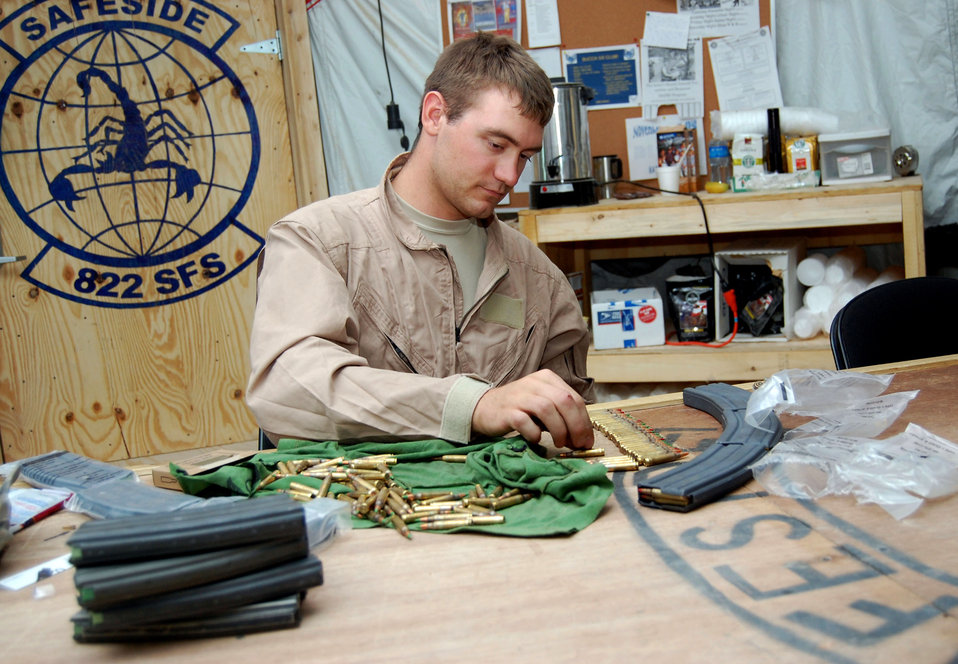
Convoy preparations

Airman 1st Class Jason Bearden inspects and fills M-4 carbine magazines before a convoy mission Nov. 12 at Camp Bucca Iraq. Airman Bearden, an 887th Expeditionary Security Forces Cobra Squad fire team member, is from Scott Air Force Base, Ill.